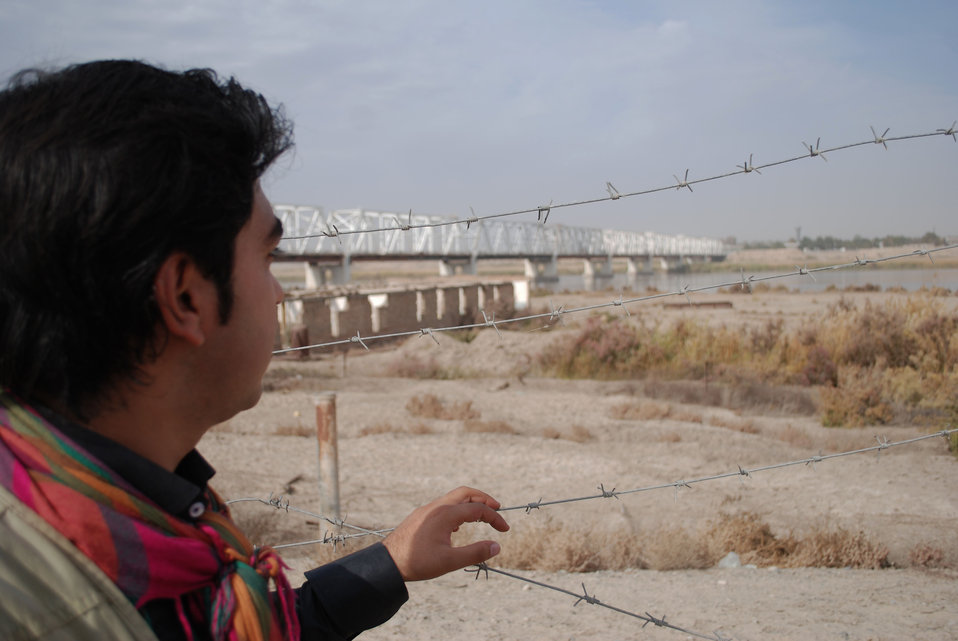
'On the Road' in Balkh Province